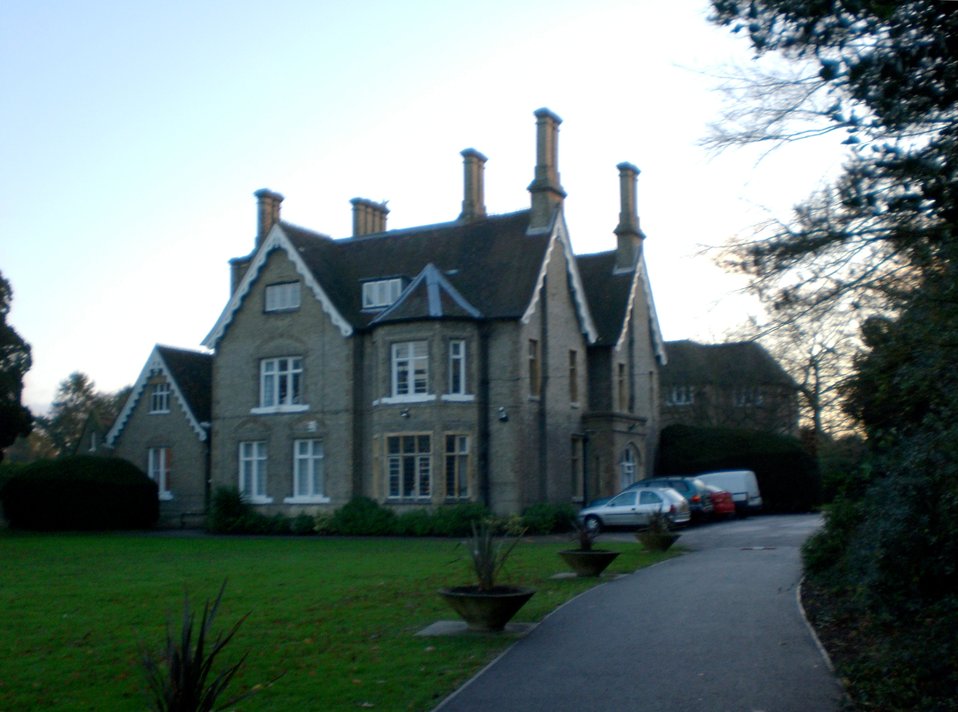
Deutsch: Thames House des Hockerill College, Bishop’s Stortford; Westansicht